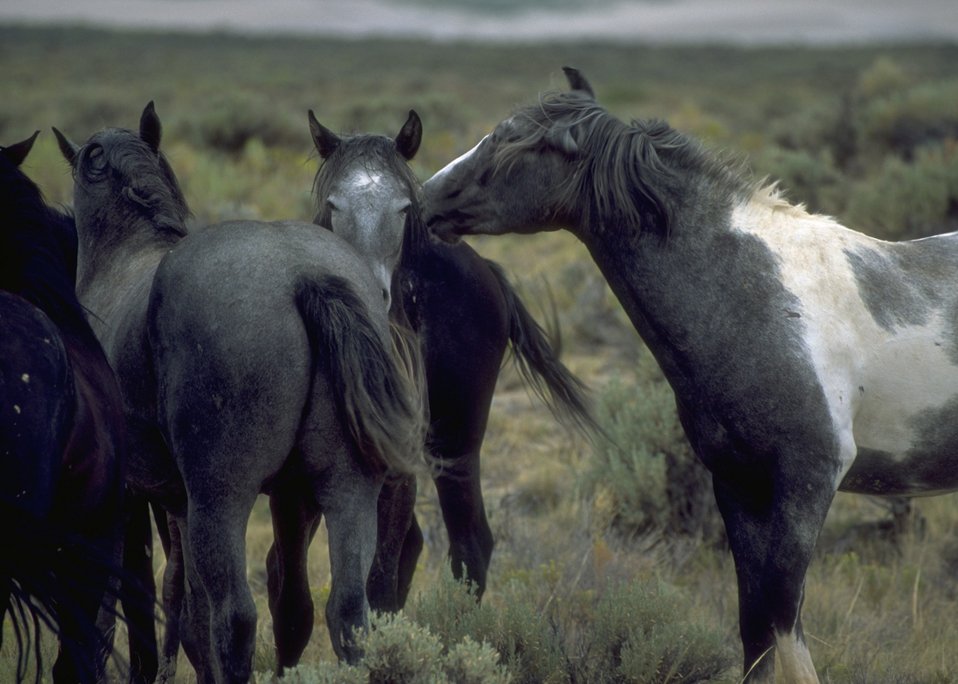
Wild horses, Rock Springs Field Office.